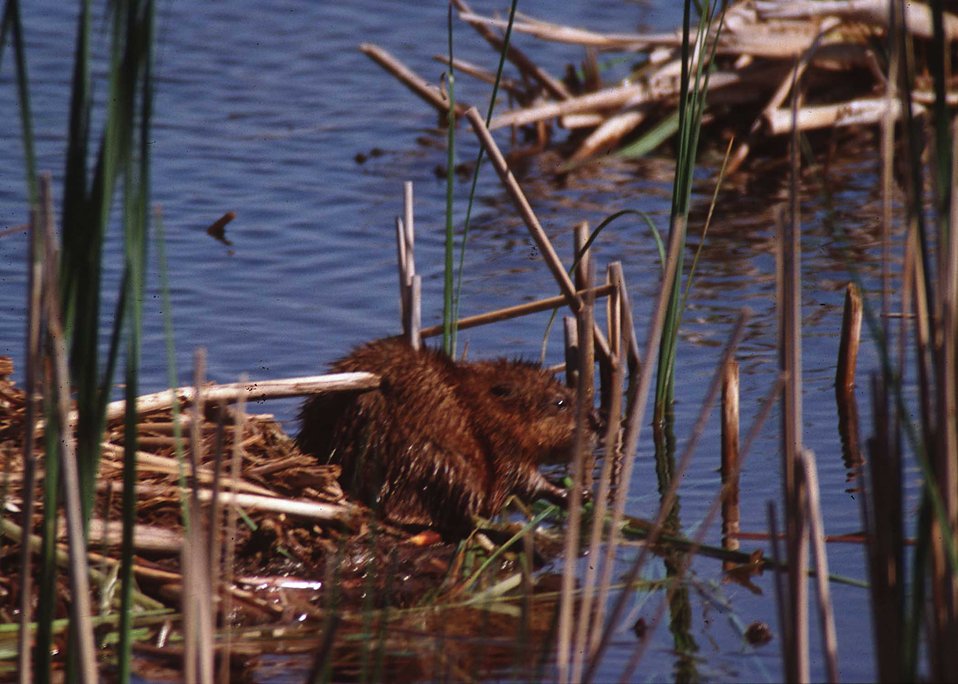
Muskrat in a South Dakota pothole wetland..